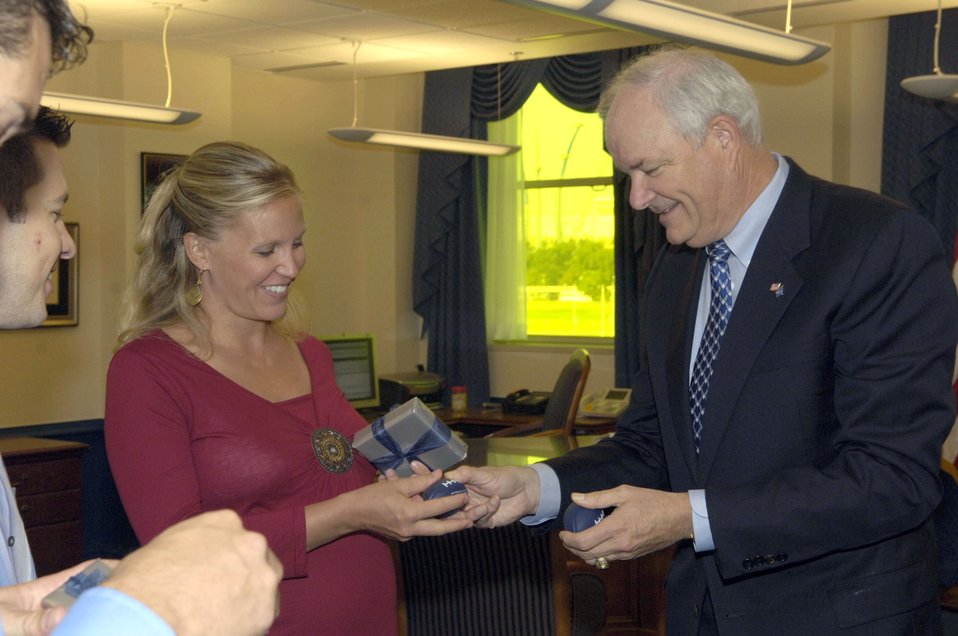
'Treasure Hunters' meet Air Force leaders

Secretary of the Air Force Michael W. Wynne meets Team Air Force from the